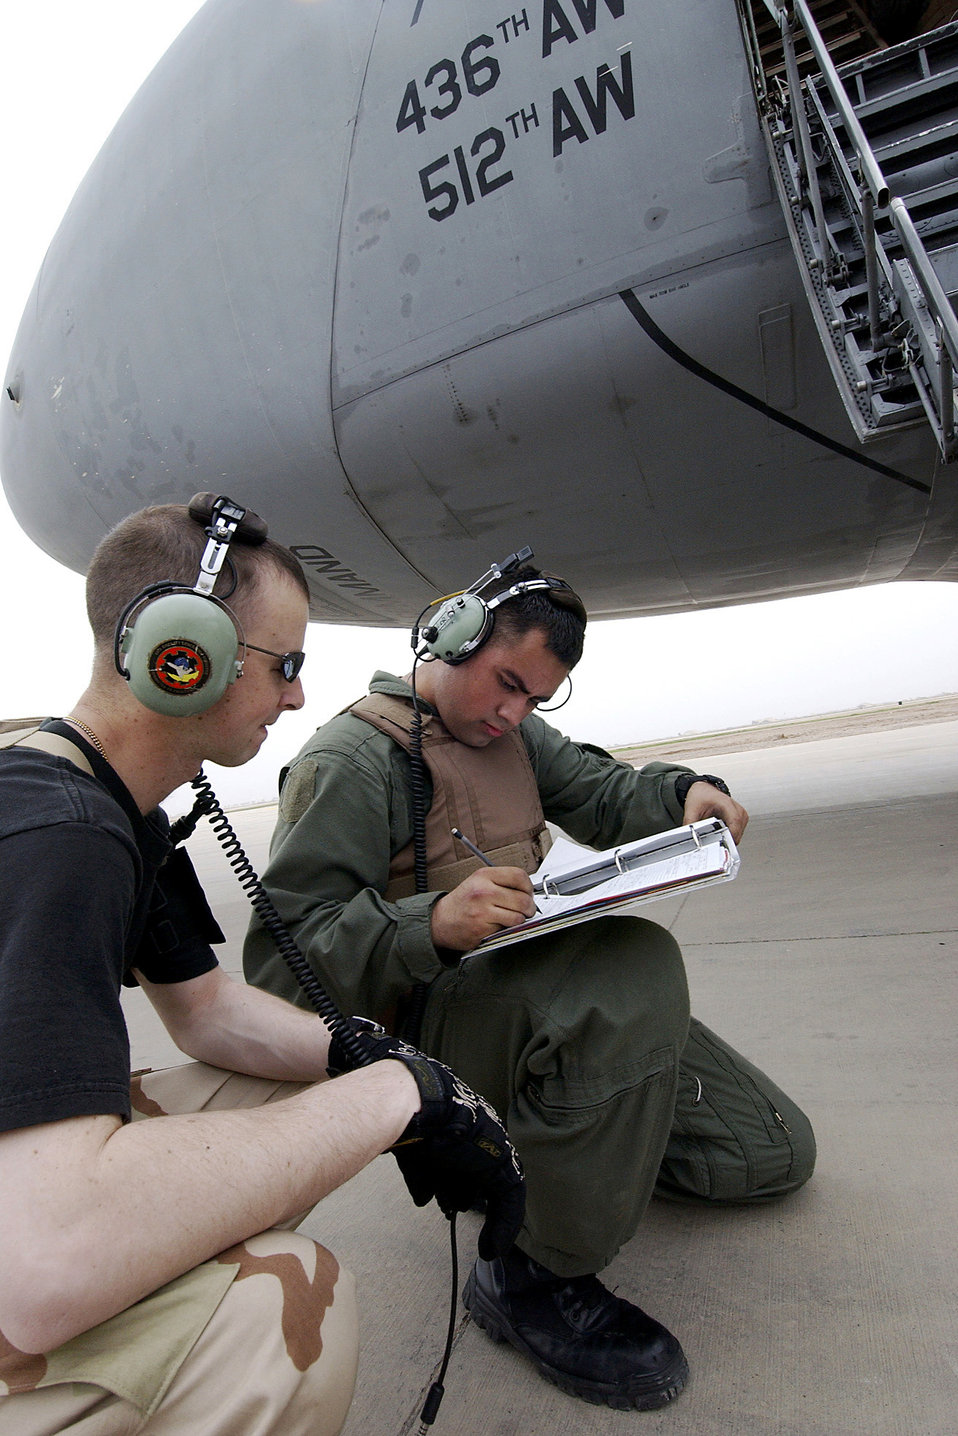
Galaxy inspection

BALAD AIR BASE, Iraq -- Senior Airmen Christopher Germain (left) and Jesus Ordaz finish signing their inspection sheets after conducting a preflight inspection on a C-5 Galaxy here March 6. Airmen Germain and Ordaz are both crew chiefs with the 332nd Air Maintenance Squadron.